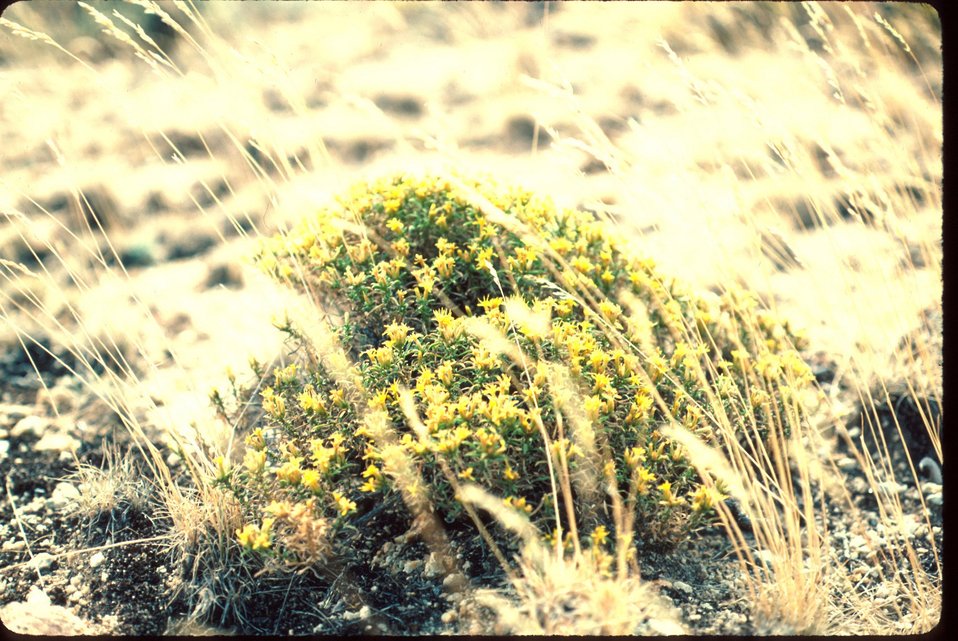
Rabbitbrush Brush